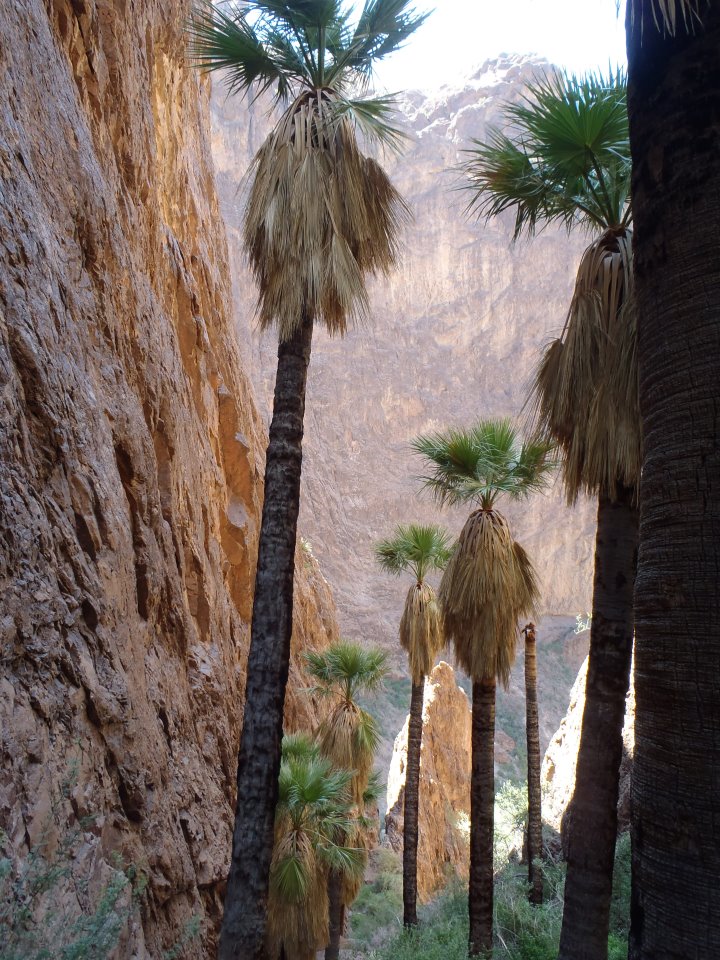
Washingtonia palms, Kofa National Wildlife Refuge, AZ

Photo: Kelly Lockman, USFWS
2011 Wilderness Fellow